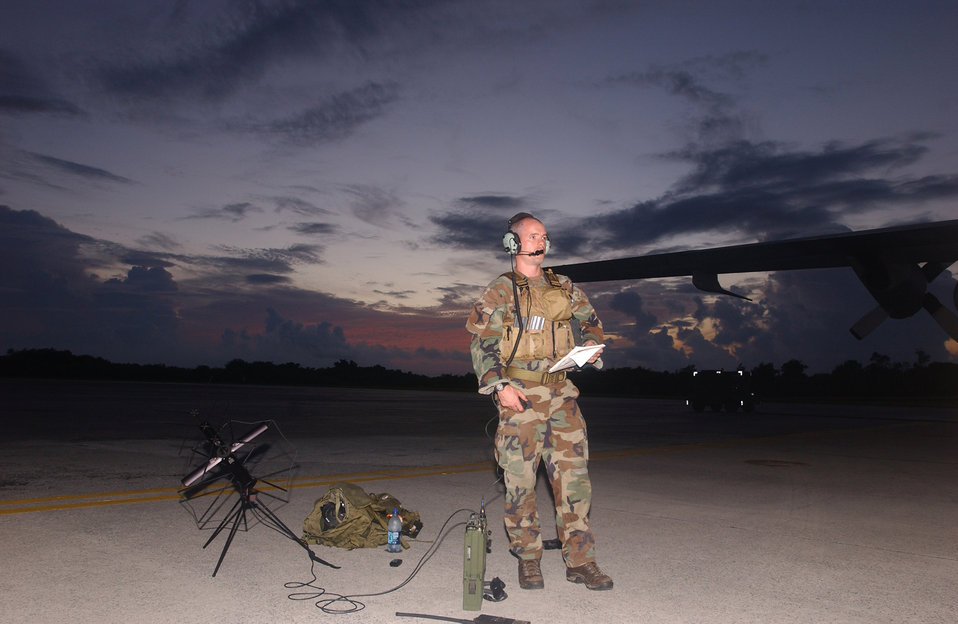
Mass casualty exercise

Capt. Charles Bris-Bois coordinates an exchange of patients from an HH-60 Pave Hawk helicopter to a C-130 Hercules transport plane during a mass casualty exercise at Kadena Air Base, Japan, Aug. 29. Captain Bris-Bois is a combat rescue officer with the 31st Rescue Squadron.